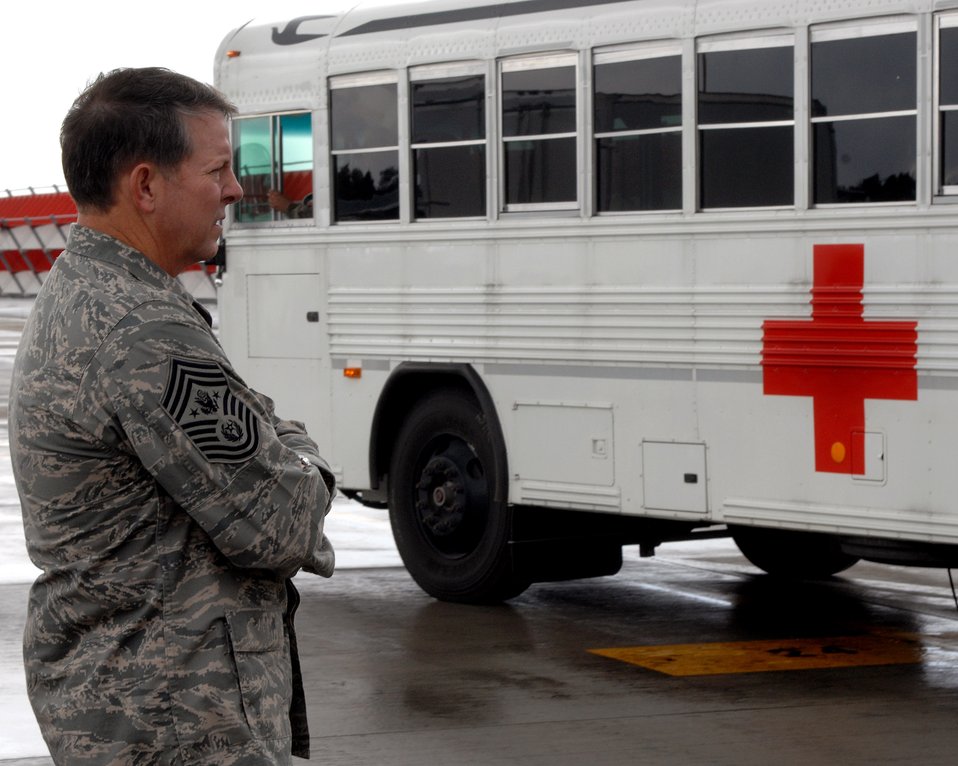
CMSAF assists with aeromedical evacuation

Chief Master Sgt. of the Air Force Rodney J. McKinley waits for a medical bus full of wounded Airmen and Soldiers so he can help load patients onto an aeromedical evacuation flight July 10 at Ramstein Air Base, Germany. Chief McKinley followed patients through Landstuhl Regional Medical Center to the Contingency Areomedical Staging Facility and finally on the flight back to the states.